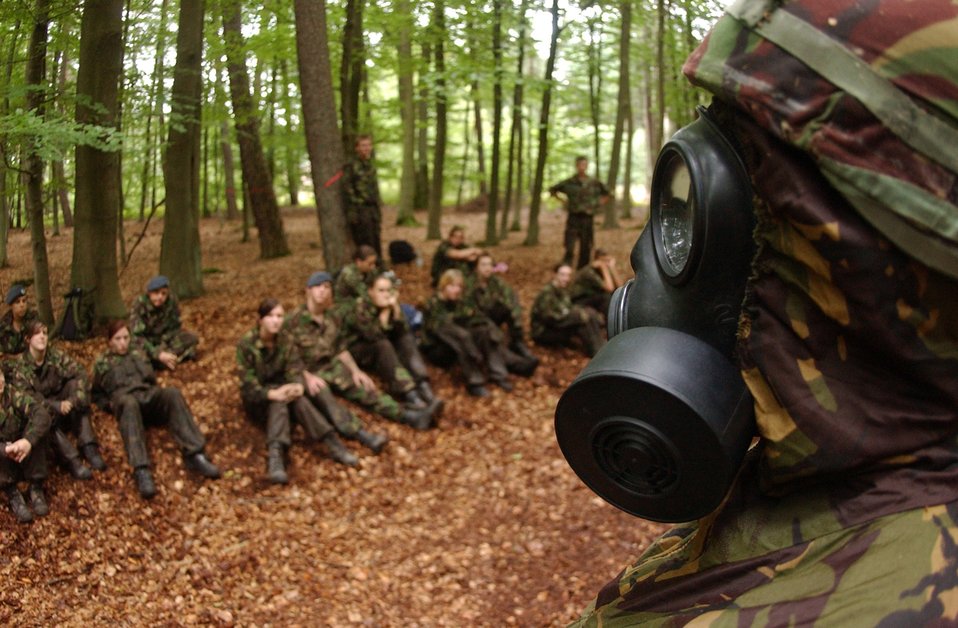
Chemical warfare training

A Royal Air Force cadet wears chemical warfare and defense gear during a demonstration for fellow cadets at the 38th Construction and Training Squadron at Ramstein Air Base, Germany, on Aug. 10. RAF cadets are attending a week-long camp at Ramstein AB.